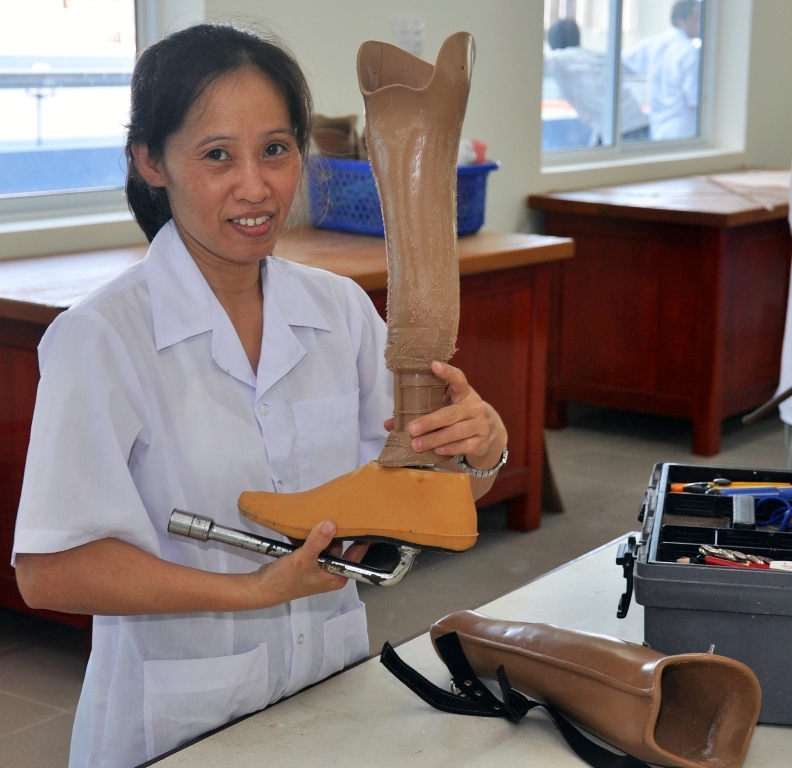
USAID assists persons with disabilities in Vietnam